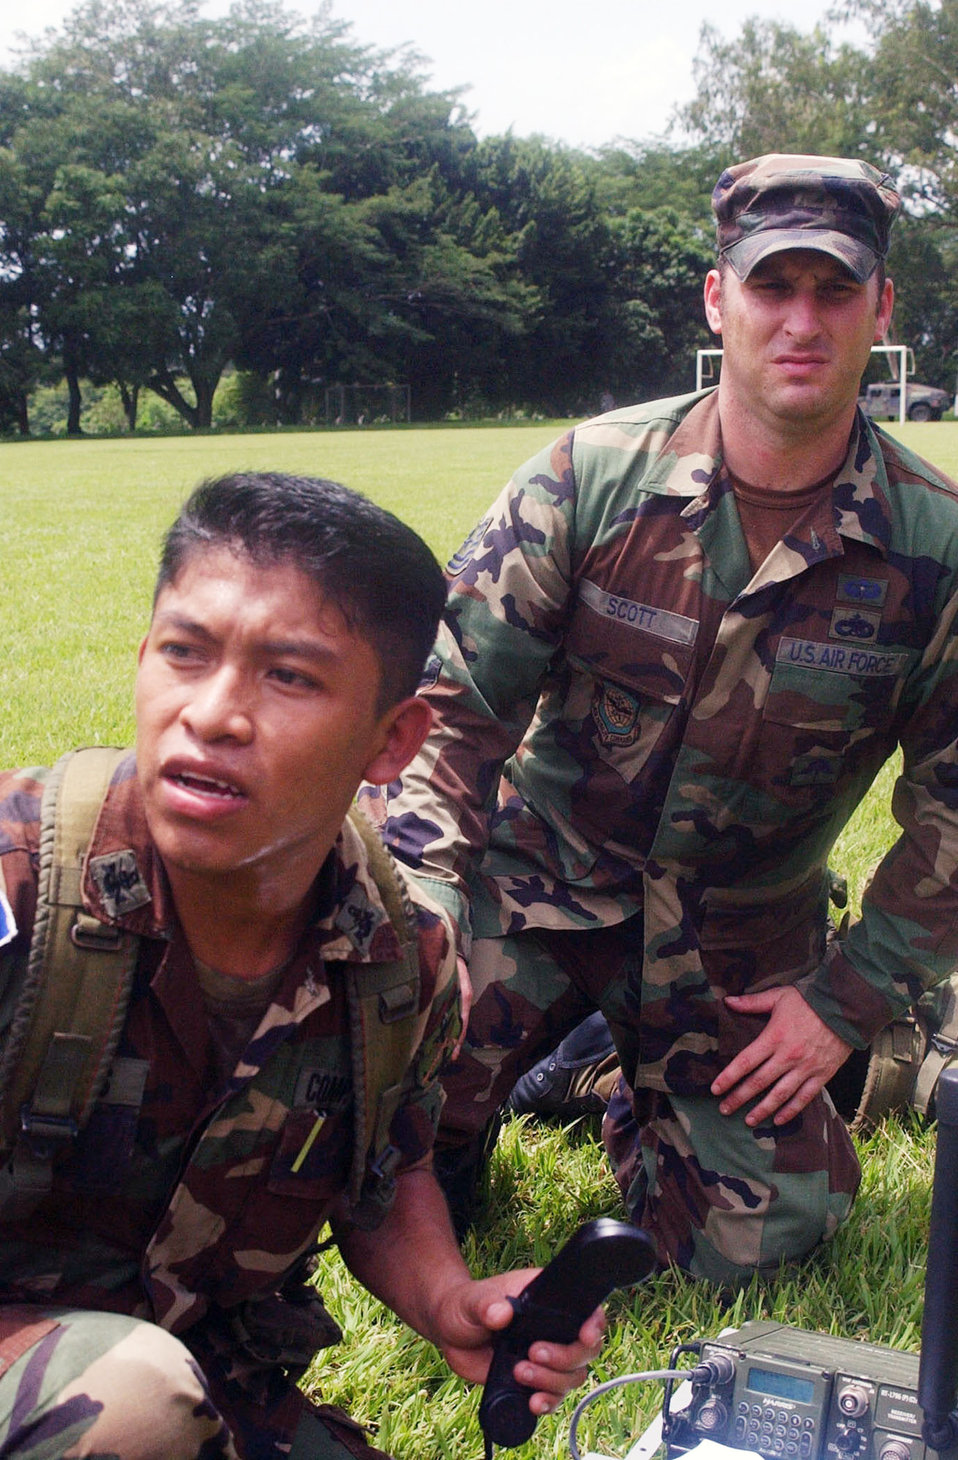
Task force provides OIF training to El Salvadorian military

Tech Sgt. Jeffery Scott observes an El Salvadorian soldier awaiting coordinates so he can call in a simulated helicopter, to medivac wounded soldiers from the battle field. During a week-long training mission, Sergeant Scott instructed soldiers on the use of communications equipment to prepare them for their upcoming deployment to support Operation Iraqi Freedom.